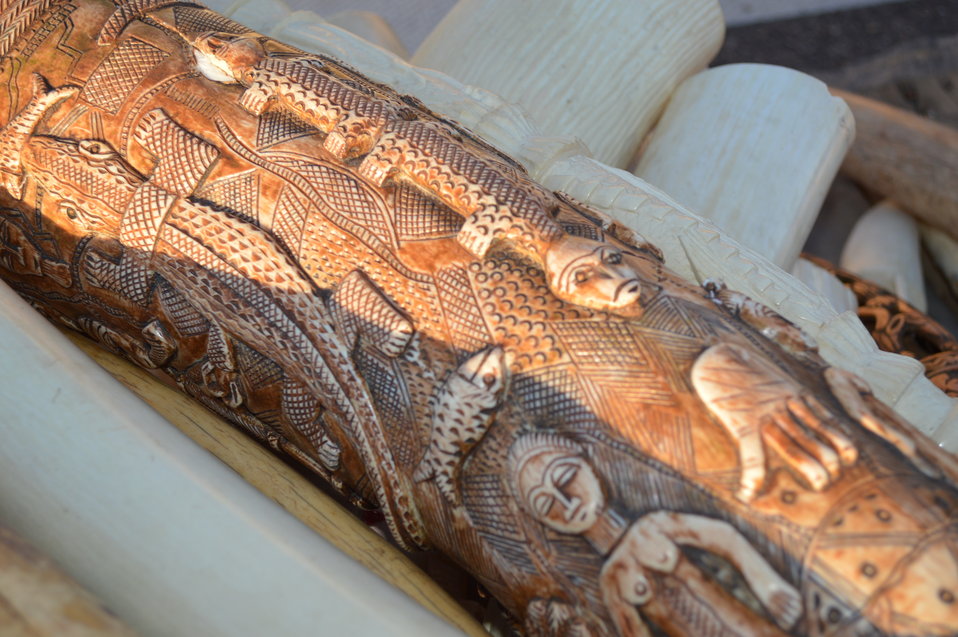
Ivory in Morning Light 3